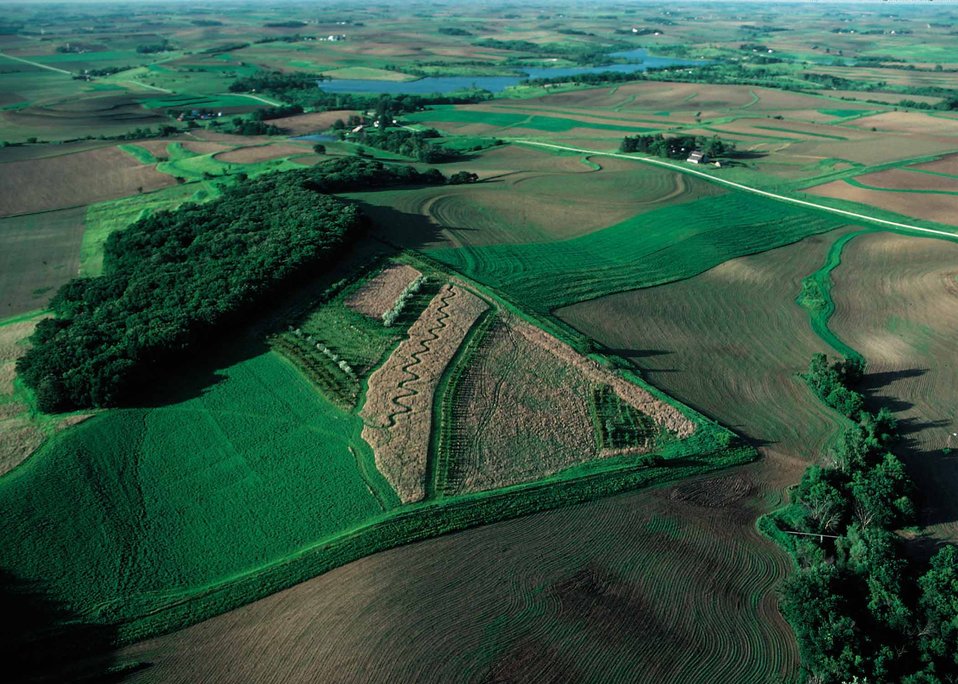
Prairie grasses and woodland plantings furnish wildlife habitat in Shelby County, Iowa.